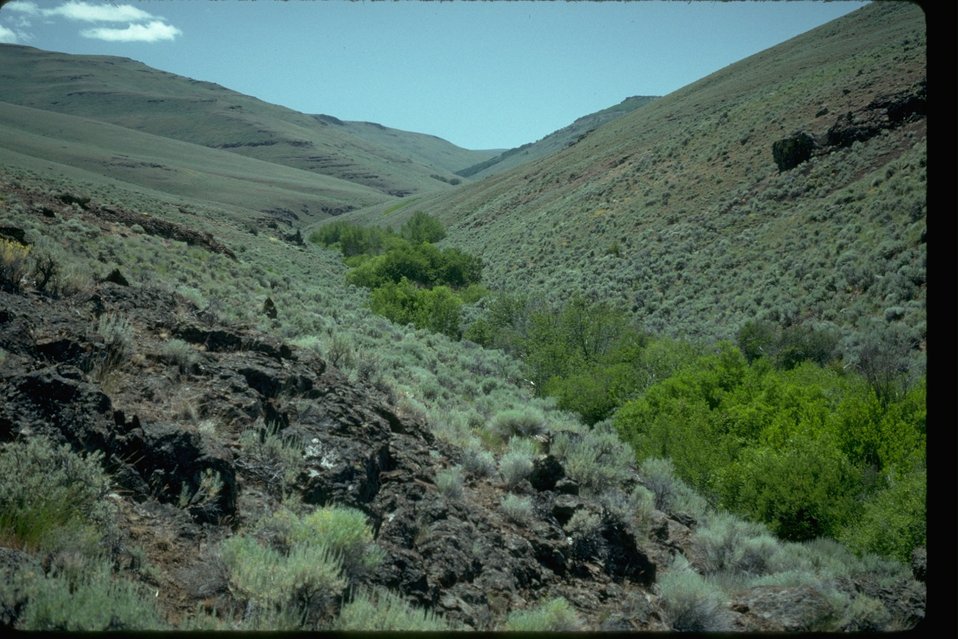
The riparian zone along Trout Creek in the Trout Creek Mountains in the Burns District in Oregon.